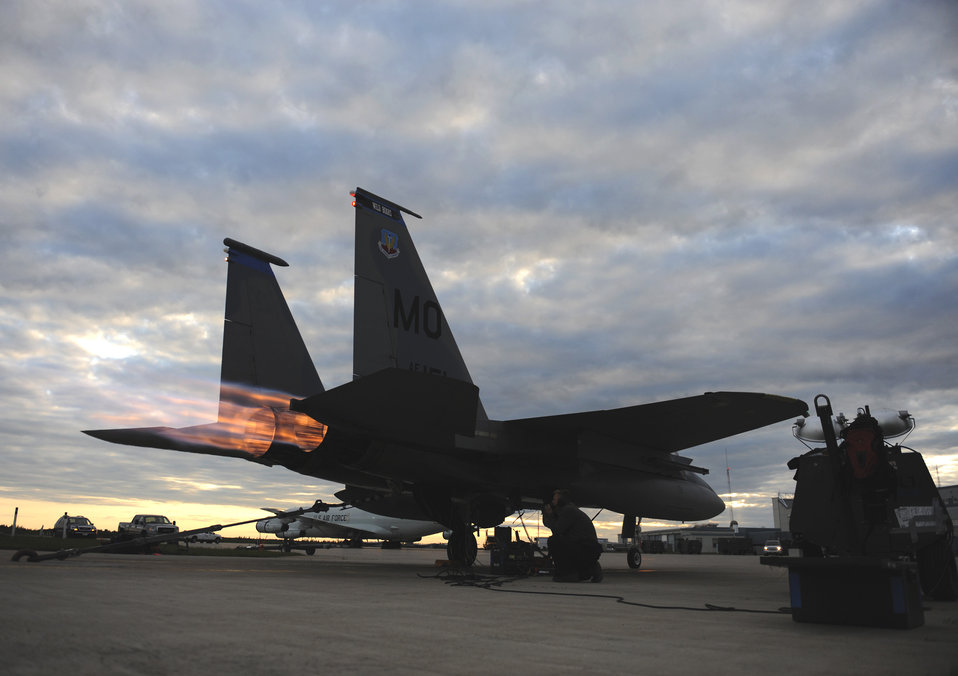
Maple Flag 42

A F-15E Strike Eagle assigned to the 390th Fighter Squadron, Mountain Home Air Force Base, Idaho, conducts an afterburner run during exercise Maple Flag 42 at 4 Wing Cold Lake, Canada, June 9. Maple Flag is a Canadian-sponsored and Air Combat Command supported exercise that provides aircrews simulated air and ground combat training to coalition forces in a NATO environment.